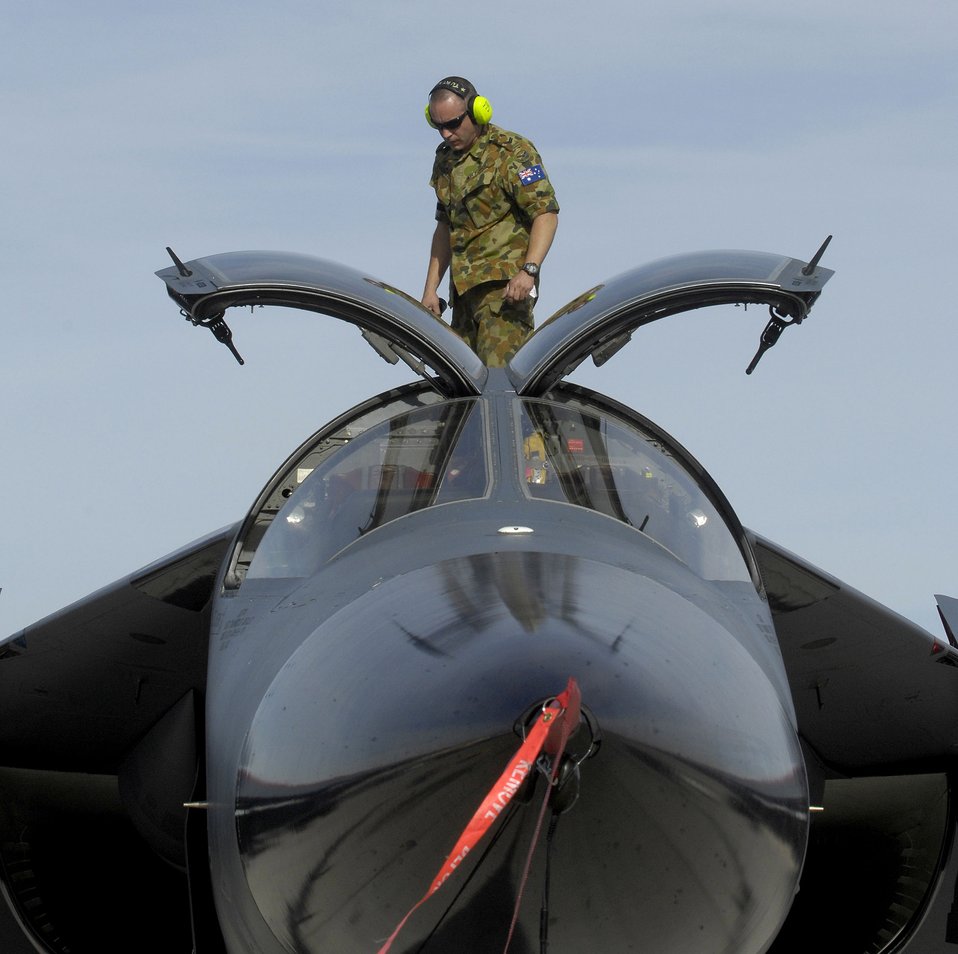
Everything looks shipshape

Corporal Lindsay Thurkettle performs a post-flight check on an Australian F-111. Royal Australian Air Force aircrews and support personnel are at Nellis Air Force Base, Nev., to participate in Joint Red Flag 07-02.